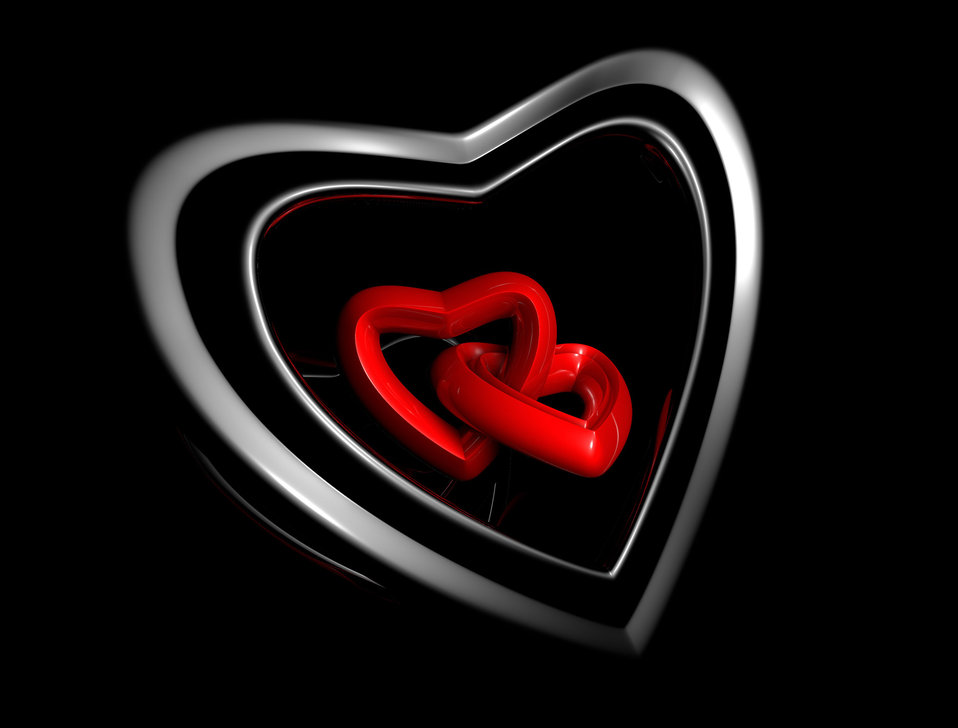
Love triangle

2 glass heart located in the same black heart.